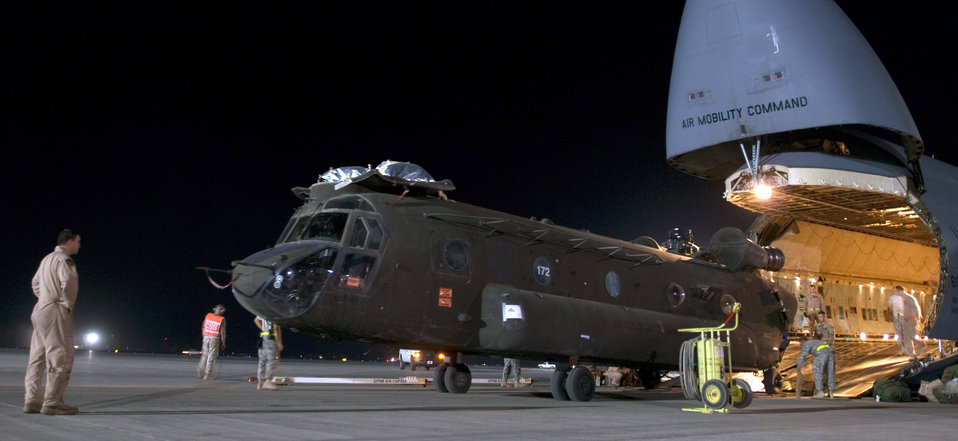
Open wide

A C-5 Galaxy crew loads a CH-47D Chinook helicopter into its cargo bay at Joint Base Balad, Iraq. The base processes more than 950 cargo aircraft, 12,000 tons of cargo and 19,000 passengers per month, making it one of the busiest aerial port operations in the Department of Defense.